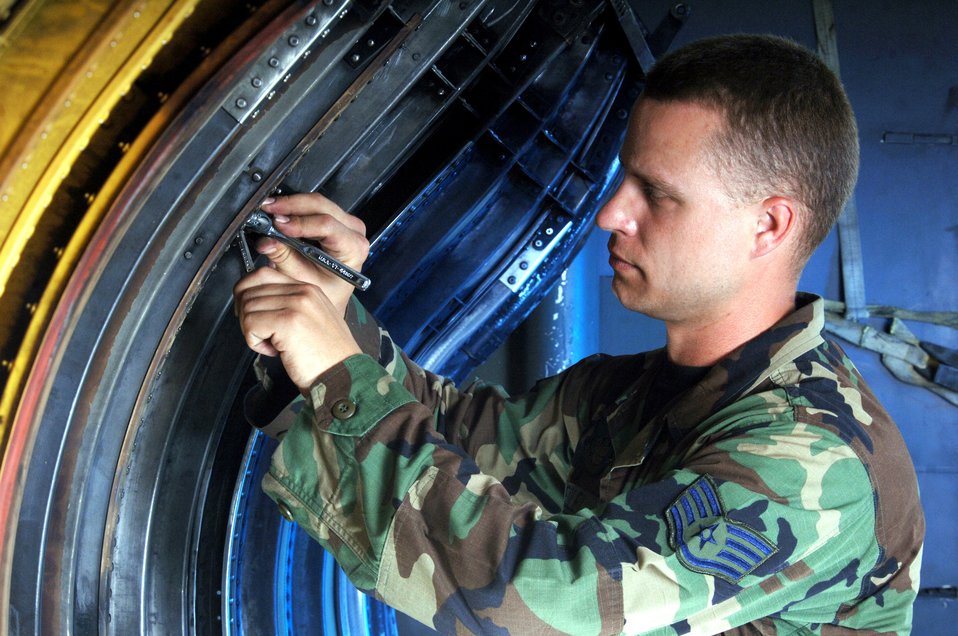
Strato work

ANDERSEN AIR FORCE BASE, Guam (AFPN) -- Staff Sgt. Matthew Foley repairs a body-cowling rib of a B-52 Stratofortress aircraft. Sergeant Foley is a structural maintenance technician with the 2nd Maintenance Squadron at Barksdale Air Force Base, La.